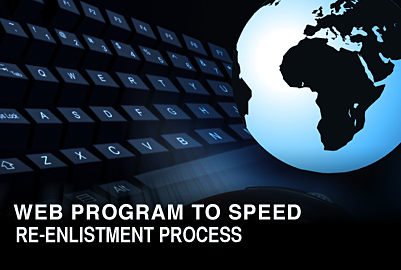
Re-enlistments